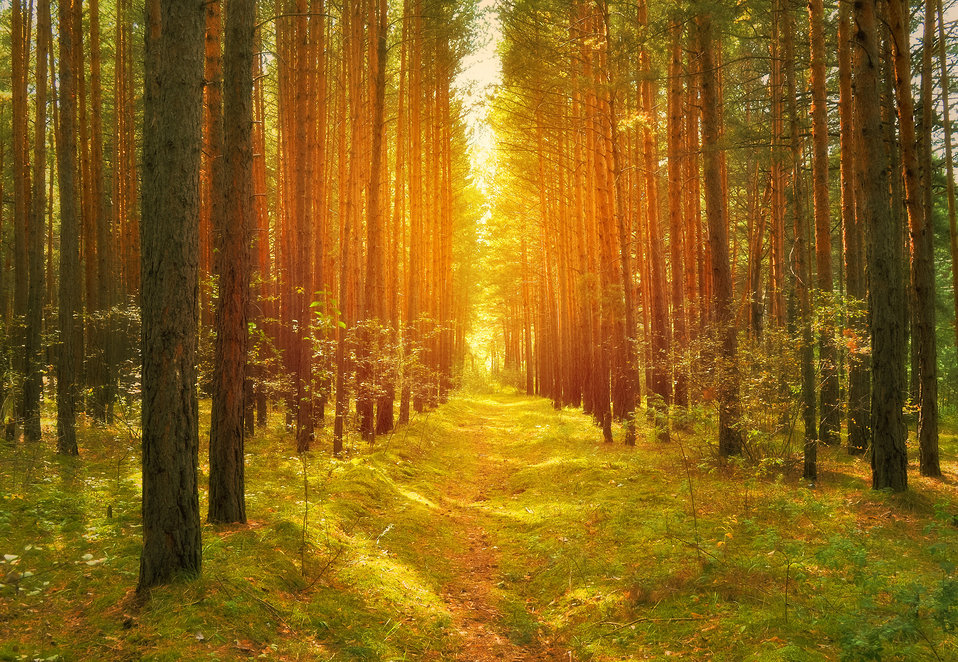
Path in the woods

Beautiful trees in the forest covered.